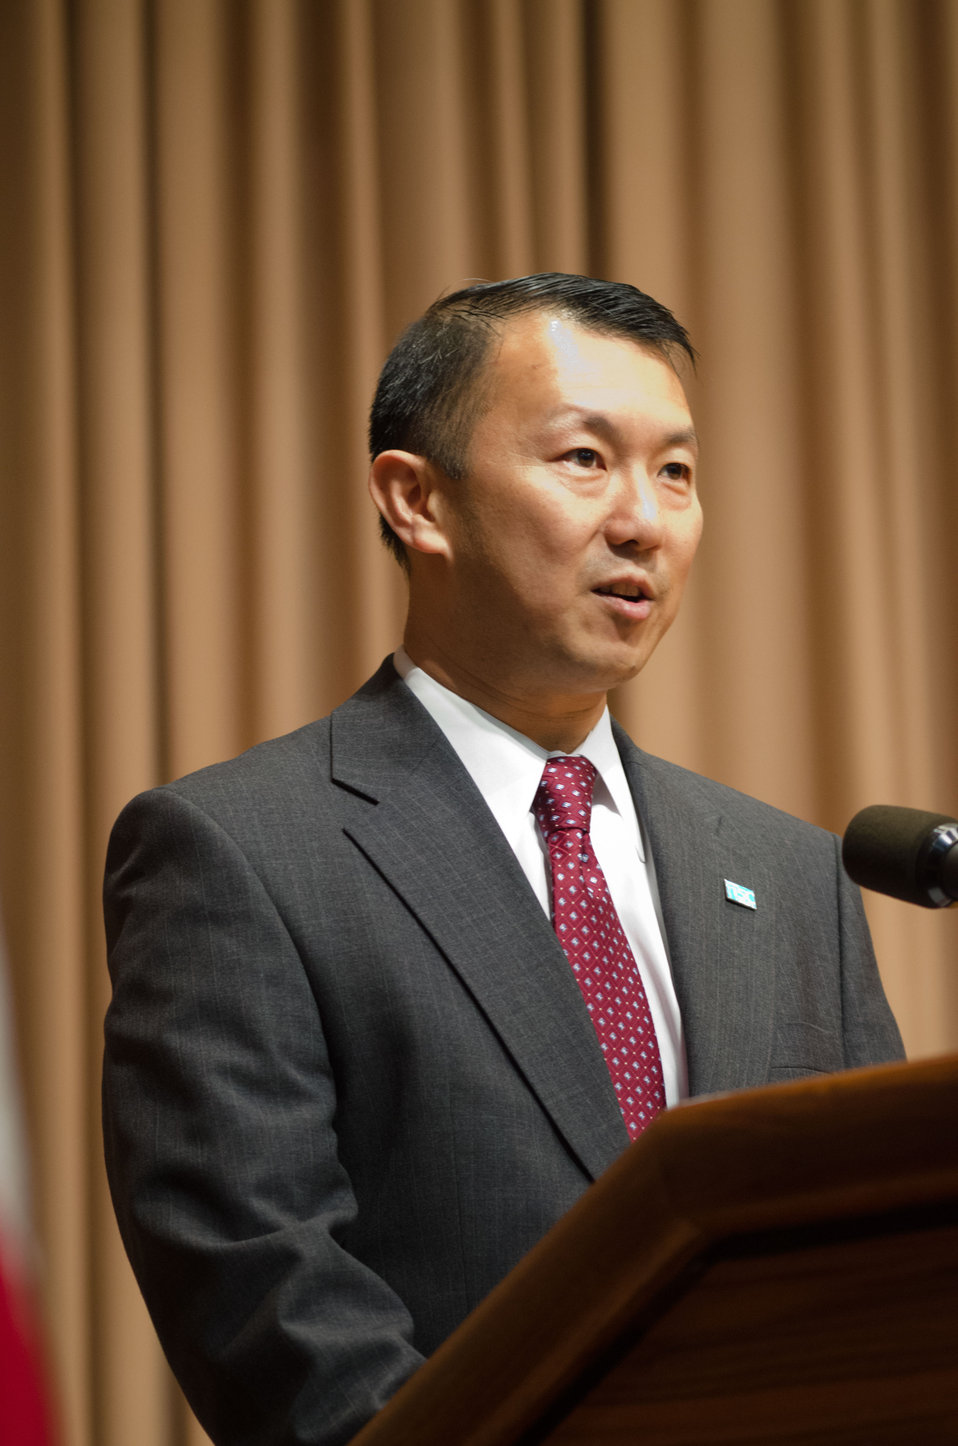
Agriculture Departmental Management, Diversity and Inclusion Program Manager Fred Chang opens the 2012 Asian Pacific American Heritage Observance “Striving for Excellence in Leadership, Diversity and Inclusion” at the U.S. Department of Agriculture in Washington, D.C. on Thursday, May 24, 2012.